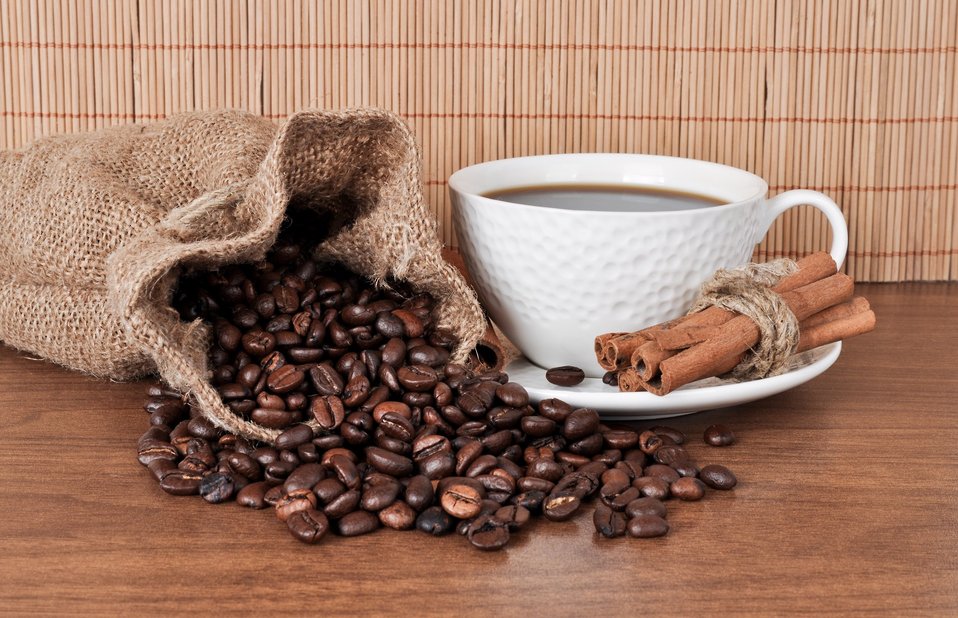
Coffee and cinnamon

Still life with coffee and cinnamon.